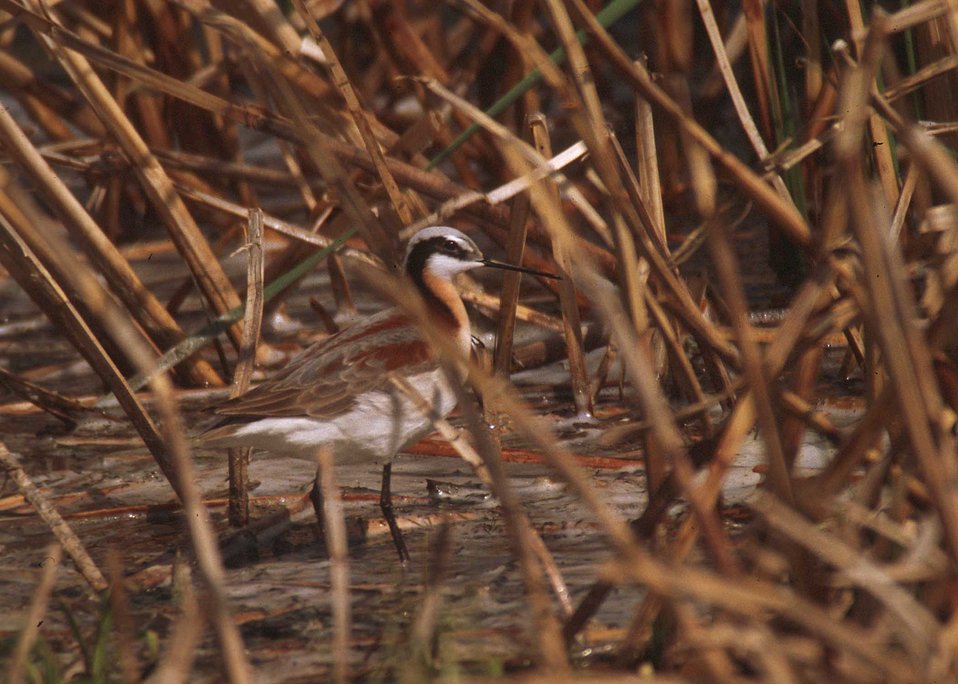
Wilson's phalarope in a pothole wetland.